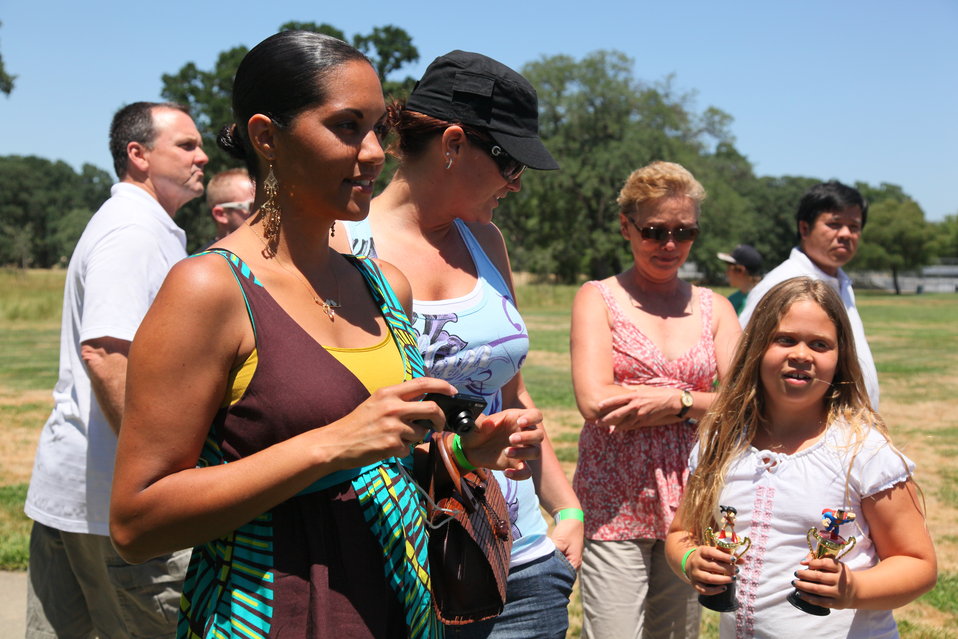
2011 Annual Picnic